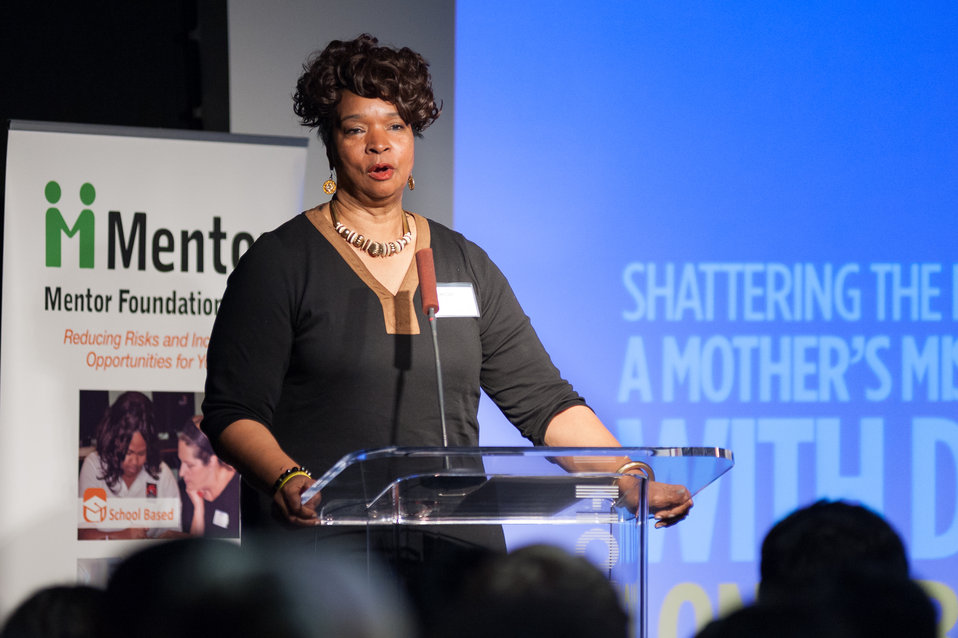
Mentor NDFW Event 2014

Mentor Foundation USA, in partnership with the National Institute on Drug Abuse (NIDA) and other key partners hosted a Youth Drug Facts Rally at the House of Sweden on Thursday, 30th January 2014. Guest Speaker Dr. Lonise Bias presented to approximately 200 students from five local high schools attended and had the opportunity to interact with top U.S. scientific experts and inspiring guest speakers to “shatter the myths” about drugs and substance abuse, while pledging to stay drug-free.